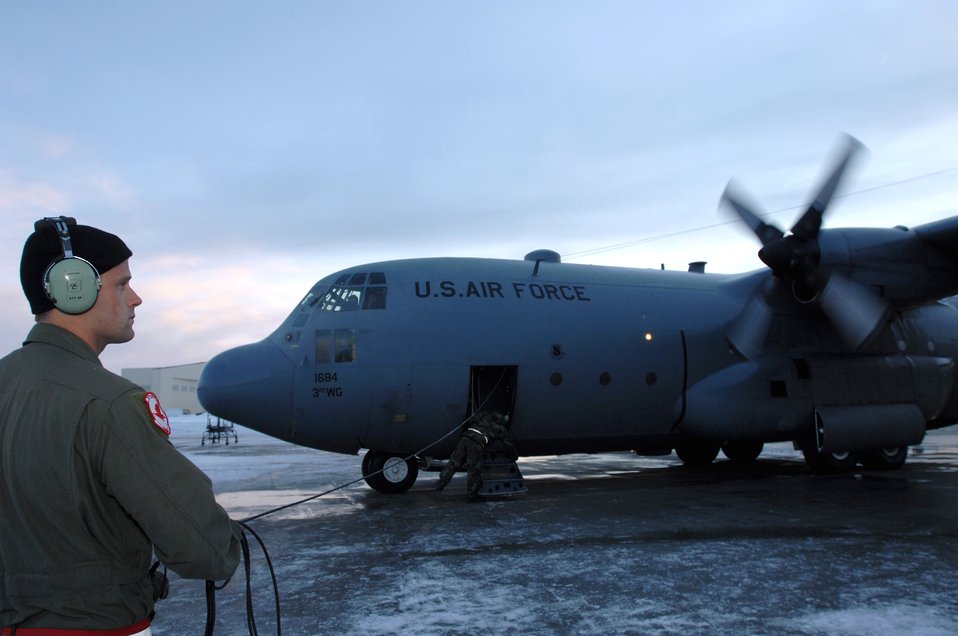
Baby, it's cold outside

Senior Airman William Oxenford directs engine start-up on a C-130 Hercules Feb. 15 before it takes off from Elmendorf Air Force Base, Alaska, on a training mission. Airman Oxenford is a load master with the 517th Airlift Squadron.